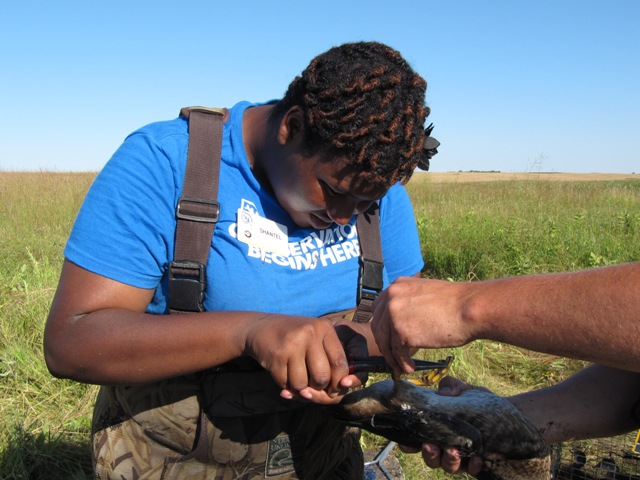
Shantel, a Career Discovery Intern, practices duck banding

U.S. Fish and Wildlife Service